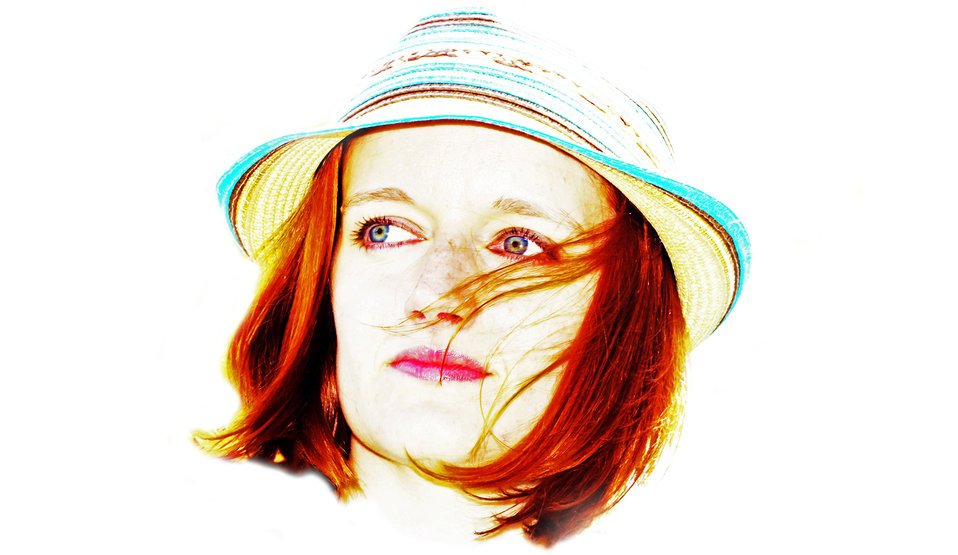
Woman and a hat.